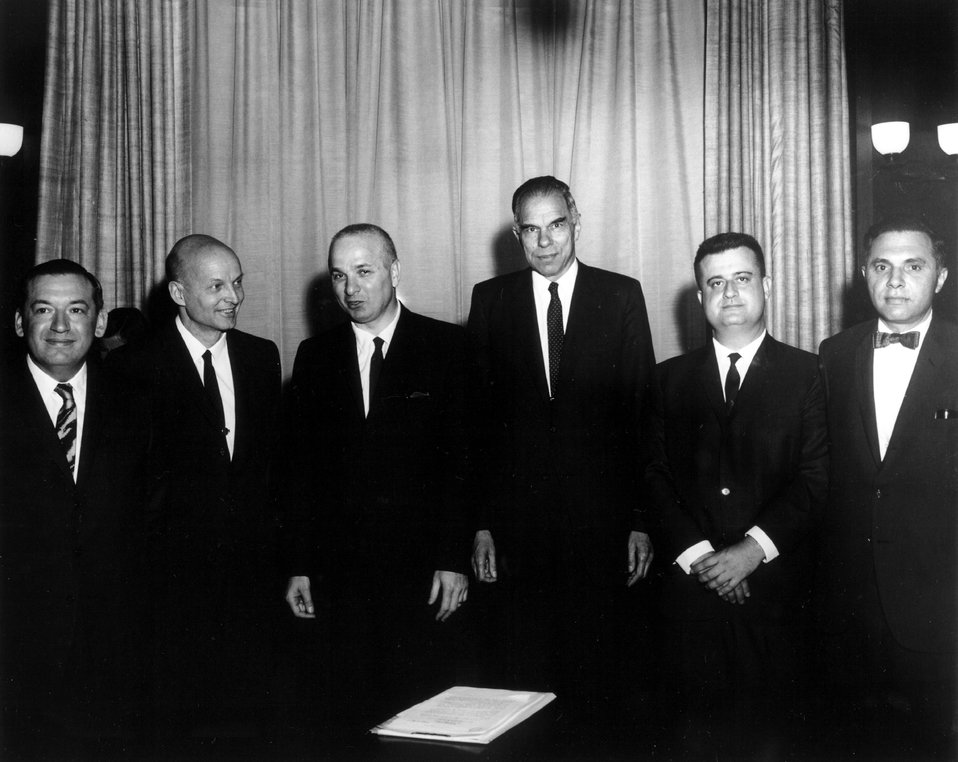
Lawrence Award, 1966.